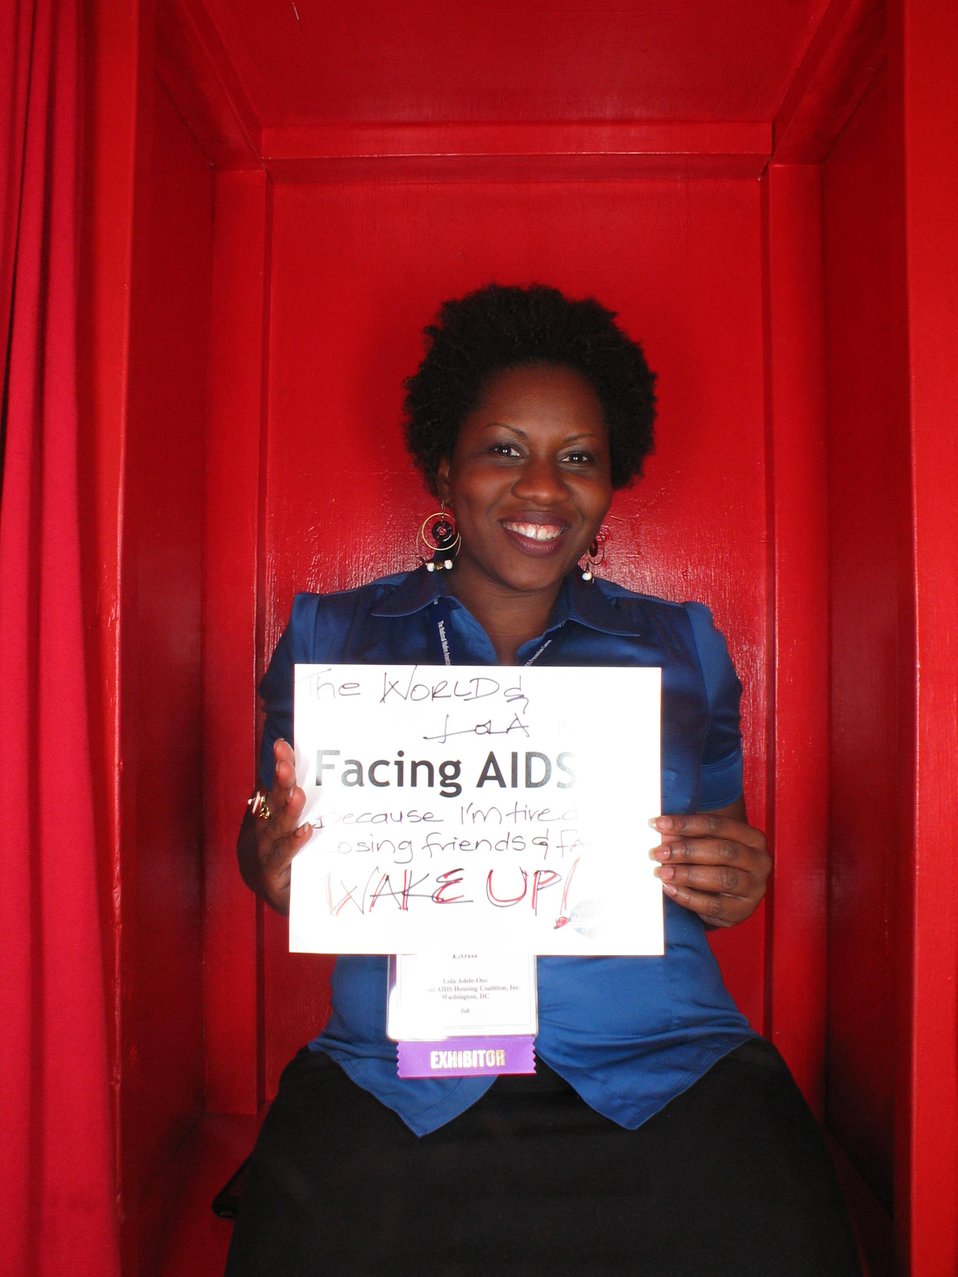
Facing AIDS because I am tired of losing friends. WAKE UP!